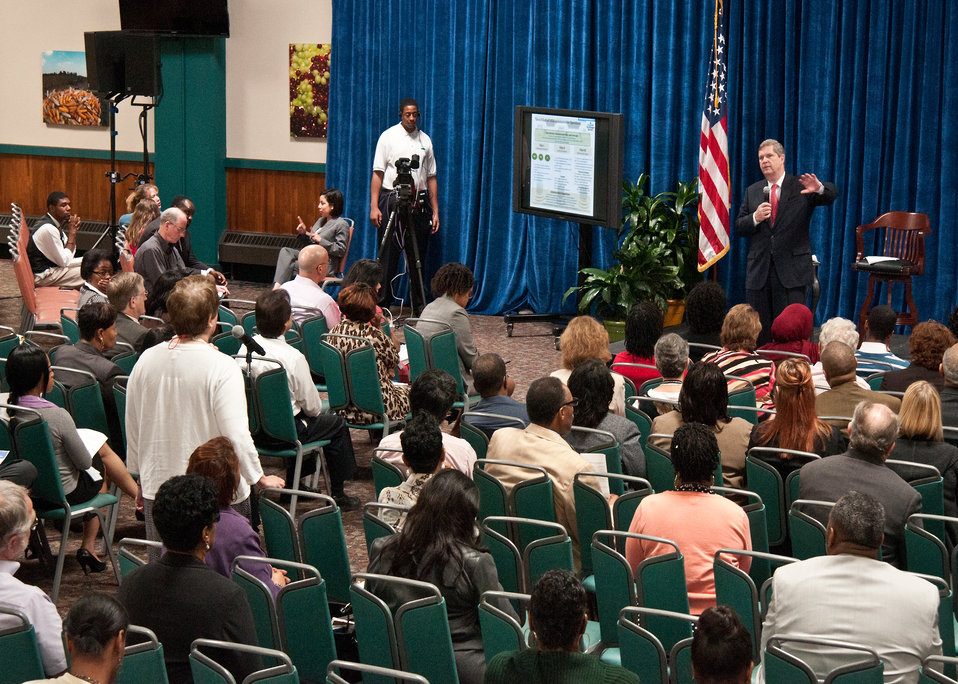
Agriculture Secretary Tom Vilsack offered U. S. Department of Agriculture (USDA) employees the opportunity to ask questions about the Blueprint for Stronger Service Initiative and hear directly from the Secretary Vilsack during the Ask The Secretary event held in the South Building Cafeteria, in Washington, D.C., on Wednesday, March 21, 2012, The Blueprint for Stronger Service Initiative aims to build a modern and efficient service organization that is closely timed with technological innovations - and better suited to respond to 21st century agricultural challenges.